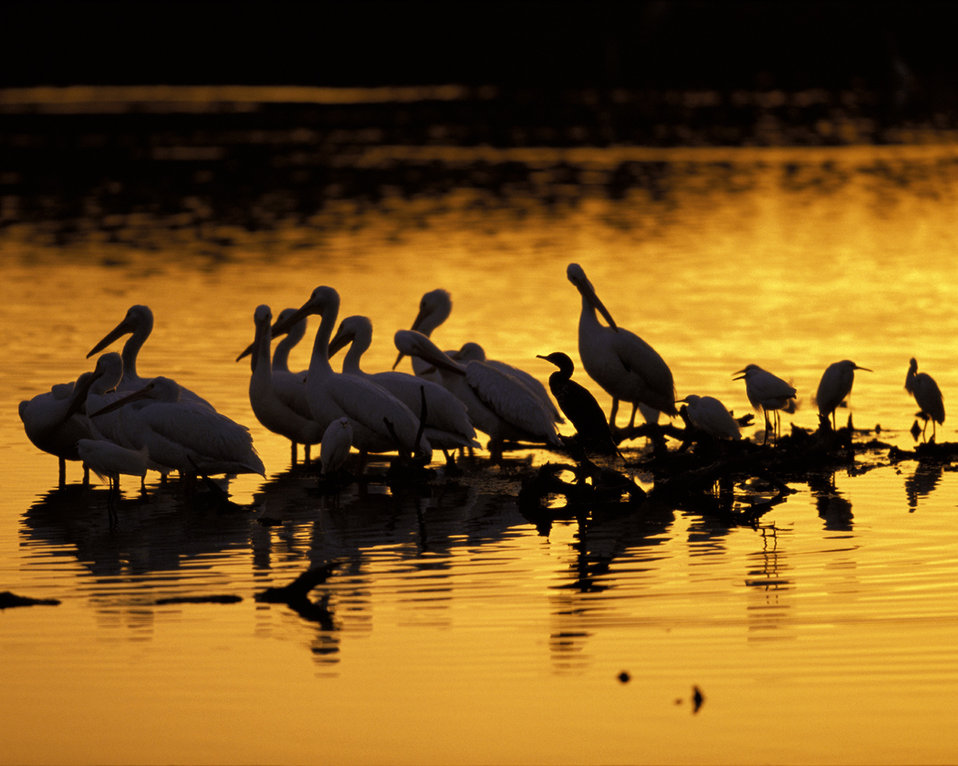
wading birds at sunset

J.N. Ding Darling National Wildlife Refuge, FL